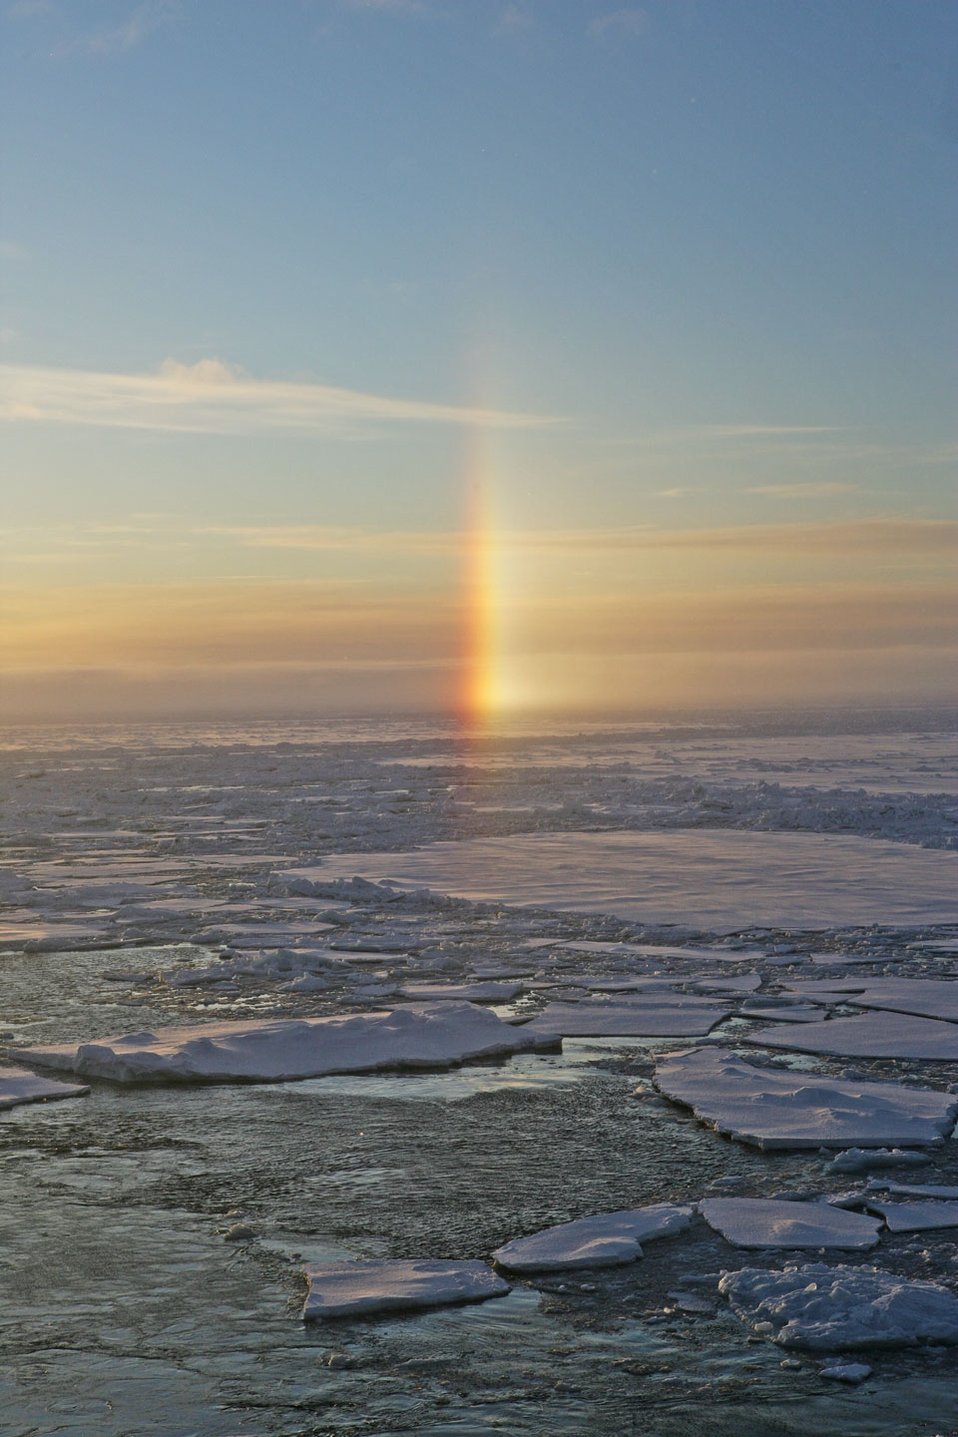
A sun dog - an atmosphere phenomenom caused by refraction of sunlight through ice crystals in the atmosphere.